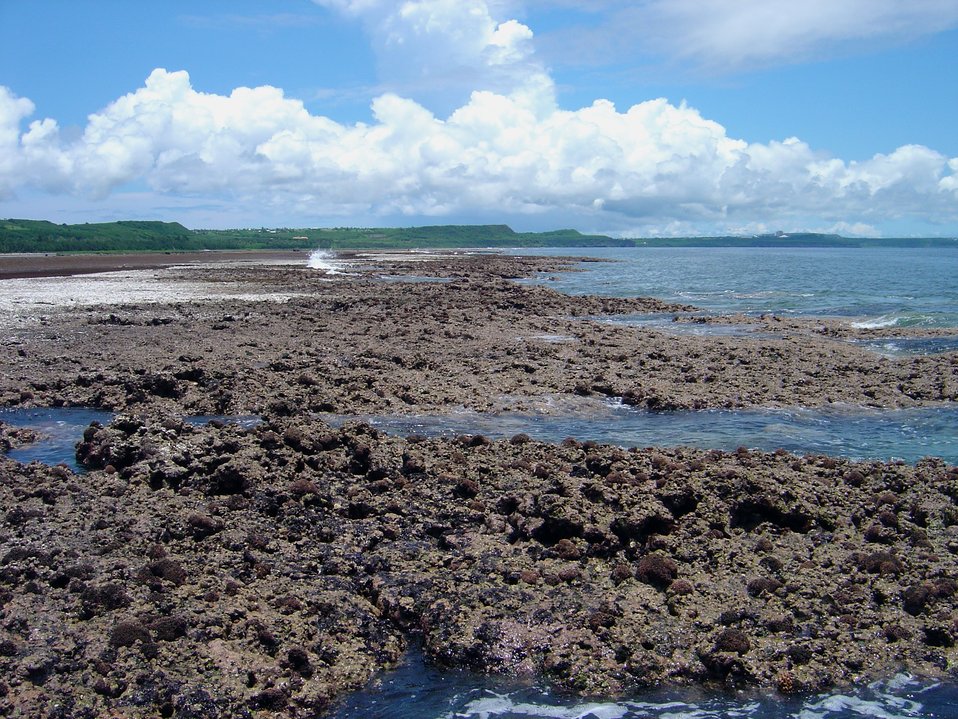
Uncovered reef flat with intervening channels at low tide on the Guam coastline.